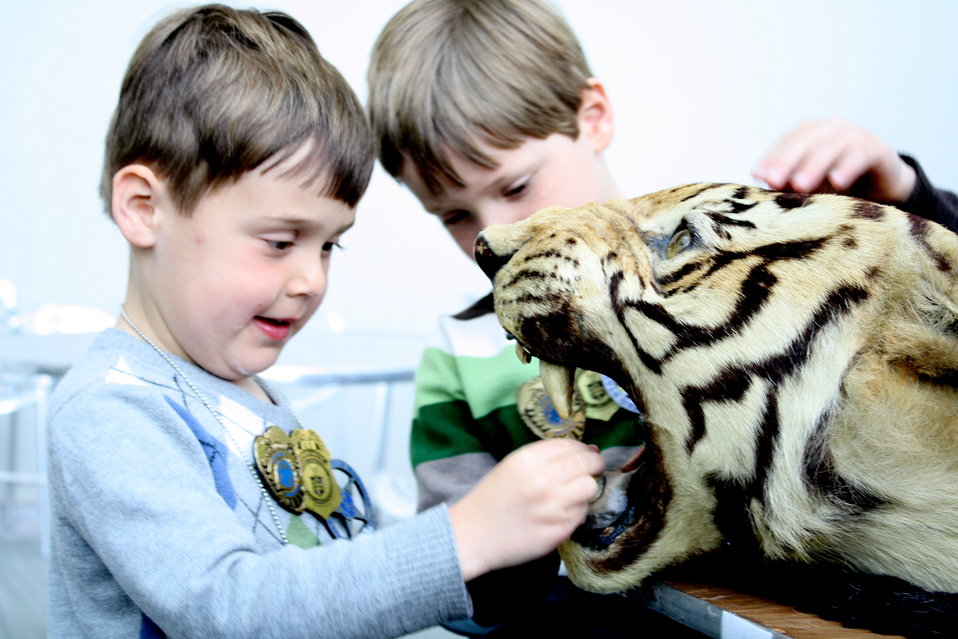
Boys and Tiger